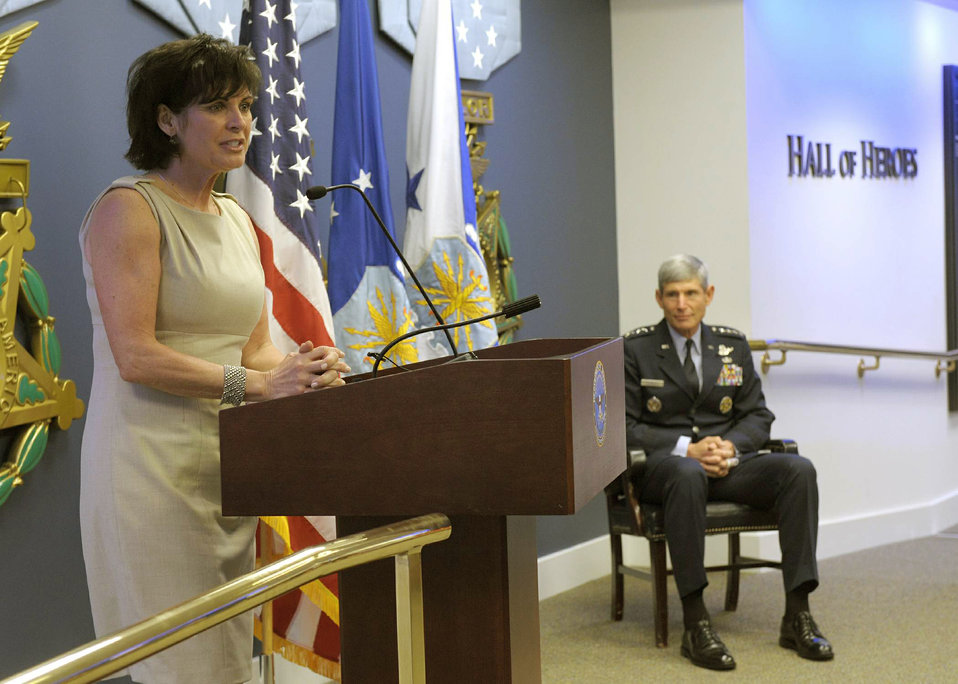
Air Force honors 2010 Sijan award winners

Janine Sijan Rozina provides remarks as Air Force Chief of Staff Gen. Norton Schwartz looks on during a ceremony May 11, 2011, in the Pentagon's Hall of Heroes where four recipients are each receiving a 2010 Lance P. Sijan USAF Leadership Award. Ms. Rozina is the younger sister of the award's namesake. The Sijan Award was created in 1981 to recognize individuals who demonstrate the highest qualities of leadership both in and out of uniform.